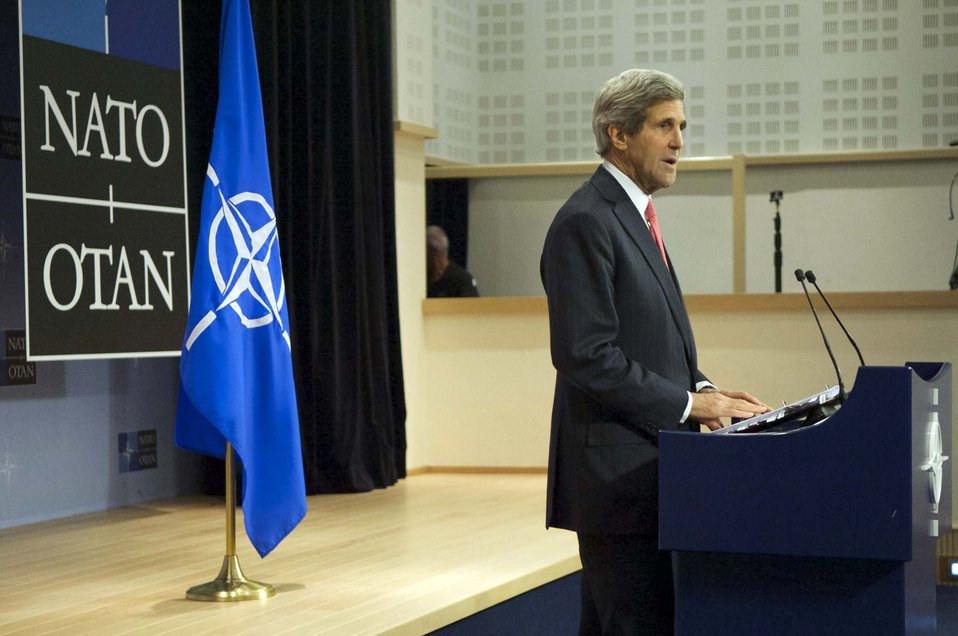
Secretary Kerry Addresses Reporters After a NATO Meeting

U.S. Secretary of State John Kerry addresses the international press corps during a news conference that followed a NATO Ministerial meeting in Brussels, Belgium, on December 3, 2013.